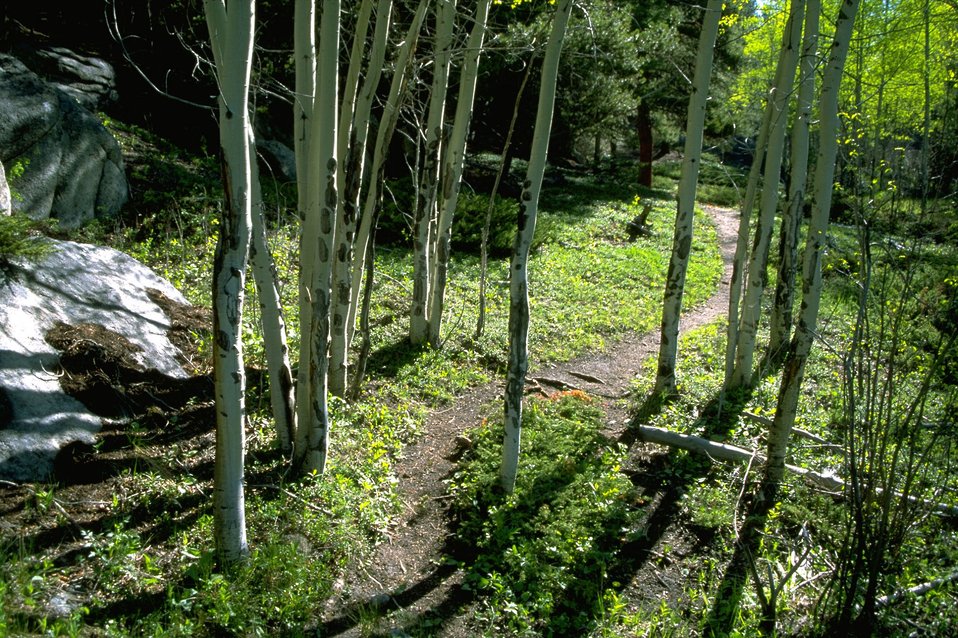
Trail wandering through the Aspen